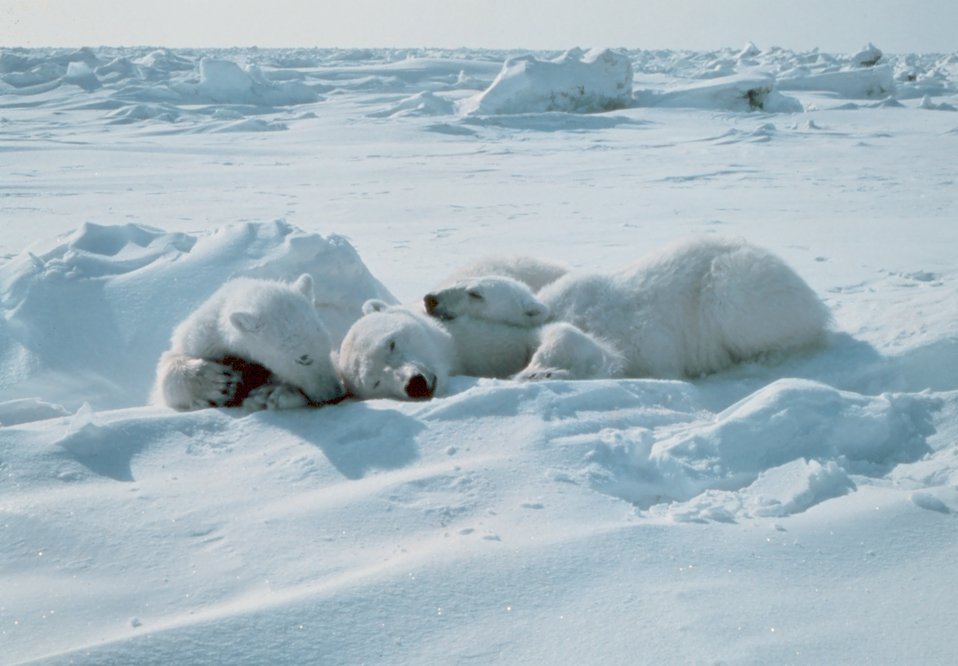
Cubs stay with sedated polar bear - Ursus maritimus - mother during Outer Continental Shelf Environmental Assessment Program studies.